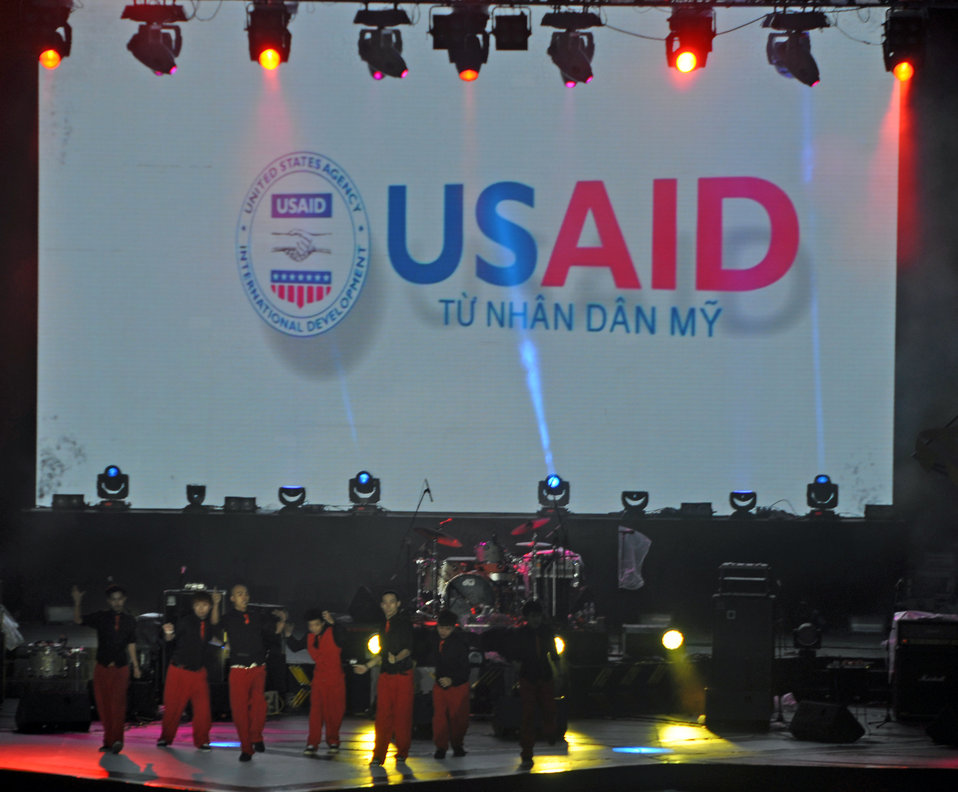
Dance Group Big Toe performs at MTV EXIT concert against human trafficking and exploitation

USAID supports MTV EXIT concert against human trafficking and exploitation